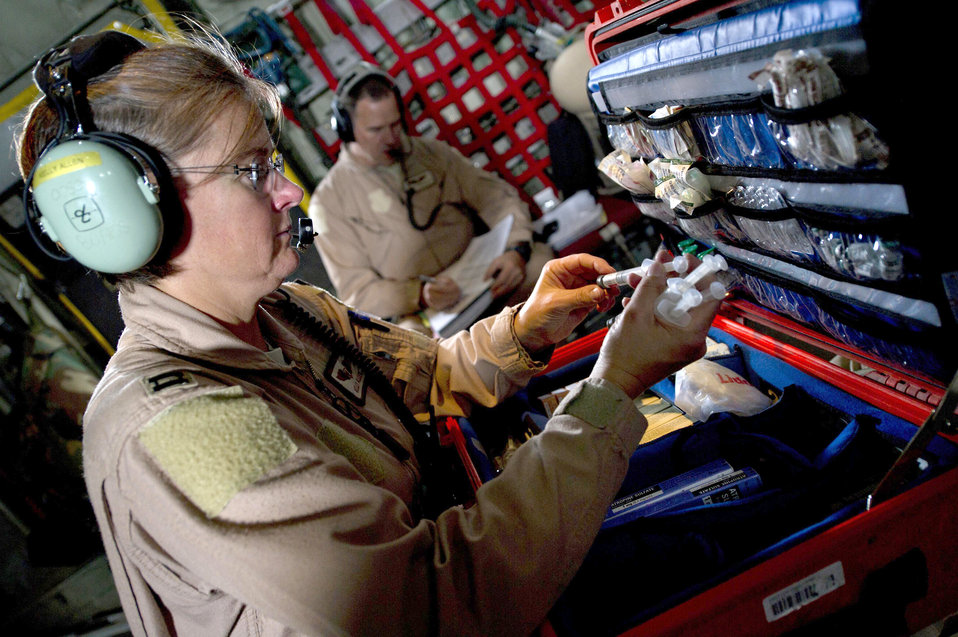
379th Expeditionary Aeromedical Evacuation Squadron

Capt. Kelly Allen inventories medical equipment aboard a C-130 Hercules April 6, 2011, during an aeromedical evacuation mission in Southwest Asia. Captain Allen is a flight nurse assigned to the 379th Expeditionary Aeromedical Evacuation Squadron.